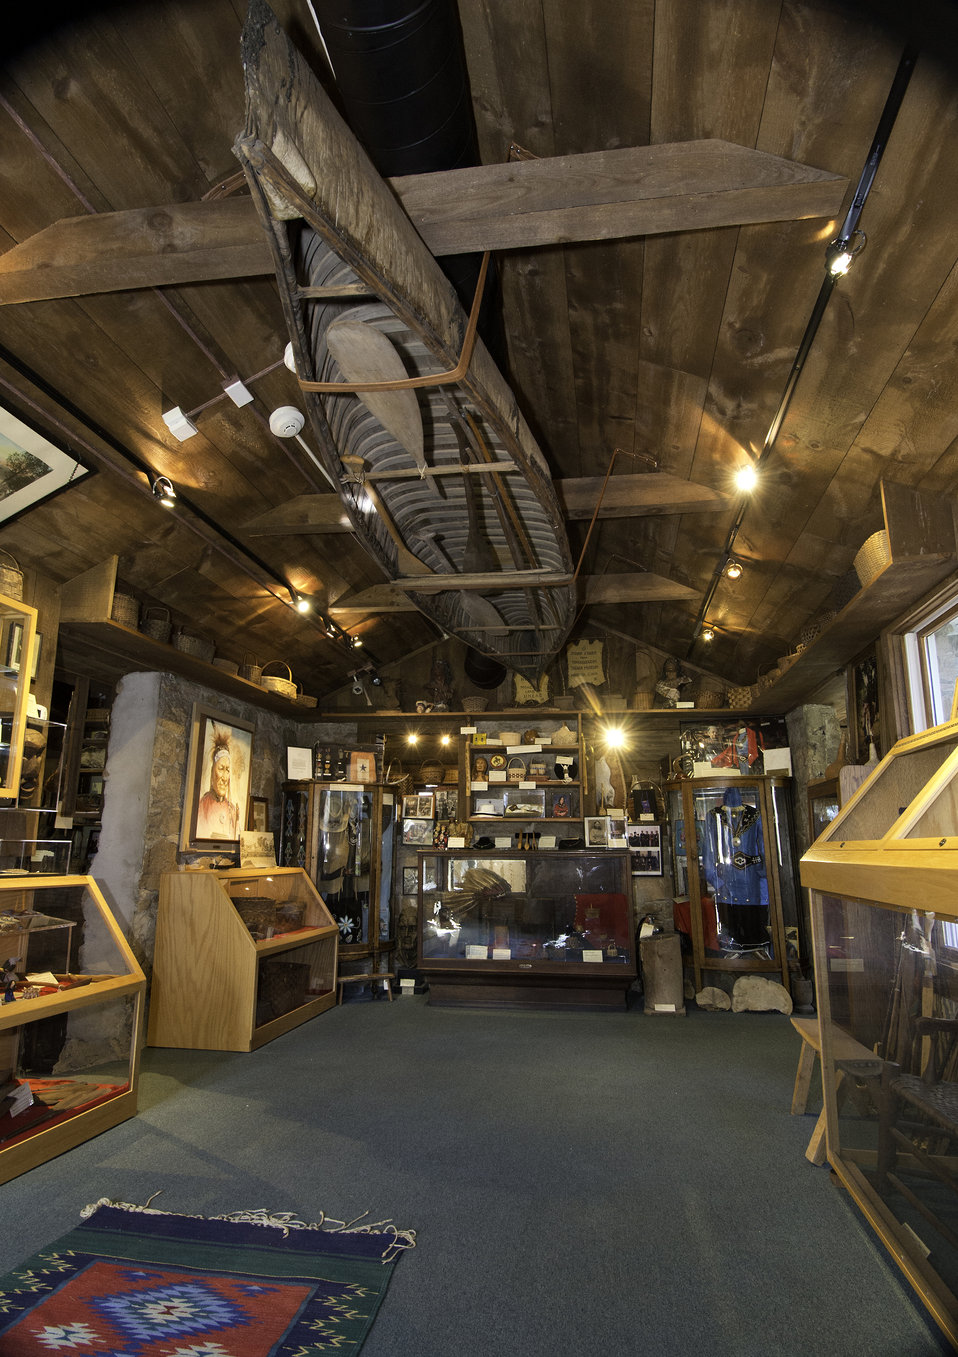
The Mohegan Tribe’s museum is the oldest Indian owned and operated museum in America. Gladys Tantaquidgeon along with her brother, Harold and father John, built the museum in 1931 in Uncasville, CT as a place to keep Mohegan treasures.